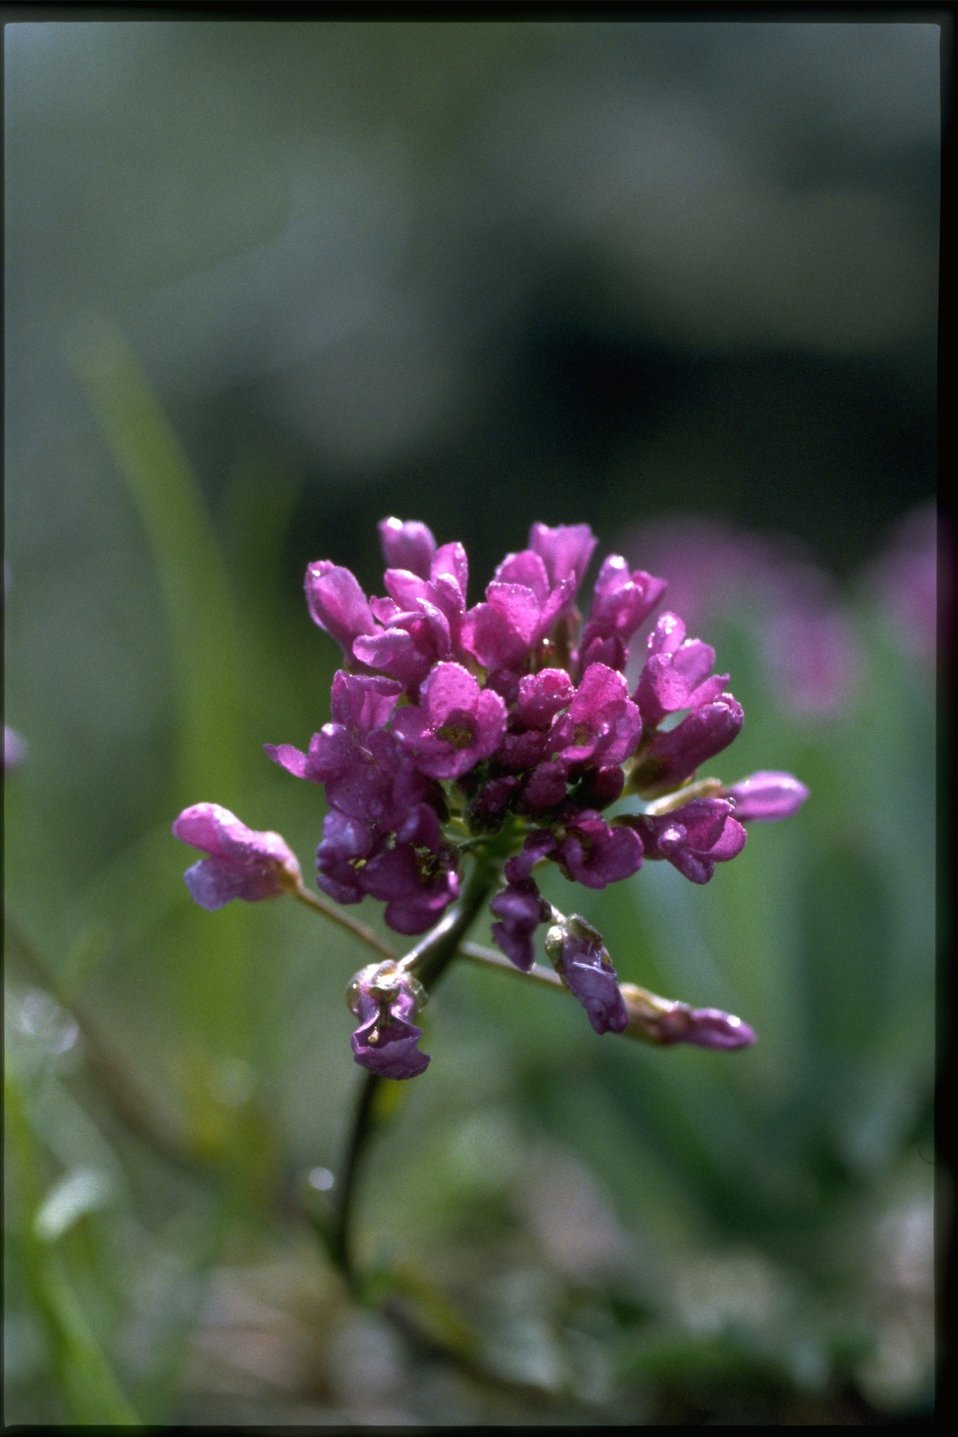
Closeup shot of daggerpod, Phoenicaulis Cheiranthoides, wildflowers.